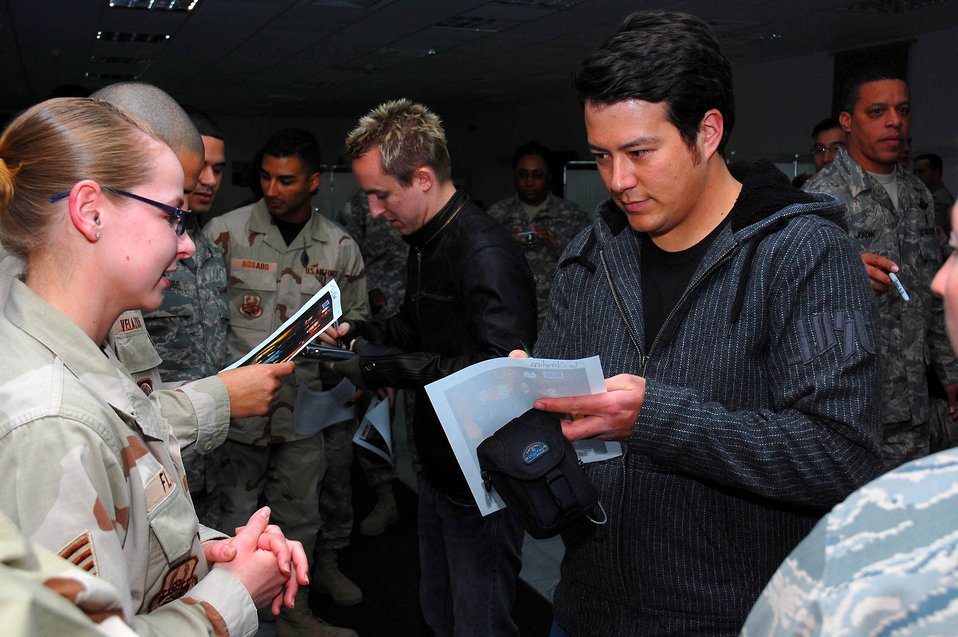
Yellowcard rocks servicemembers in Southwest Asia

Yellowcard band members sign autographs for servicemembers at the 386th Expeditionary Medical Group facility Jan. 12 at a Southwest Asia air base. The band performed an hour-long United Service Organizations' sponsored show.